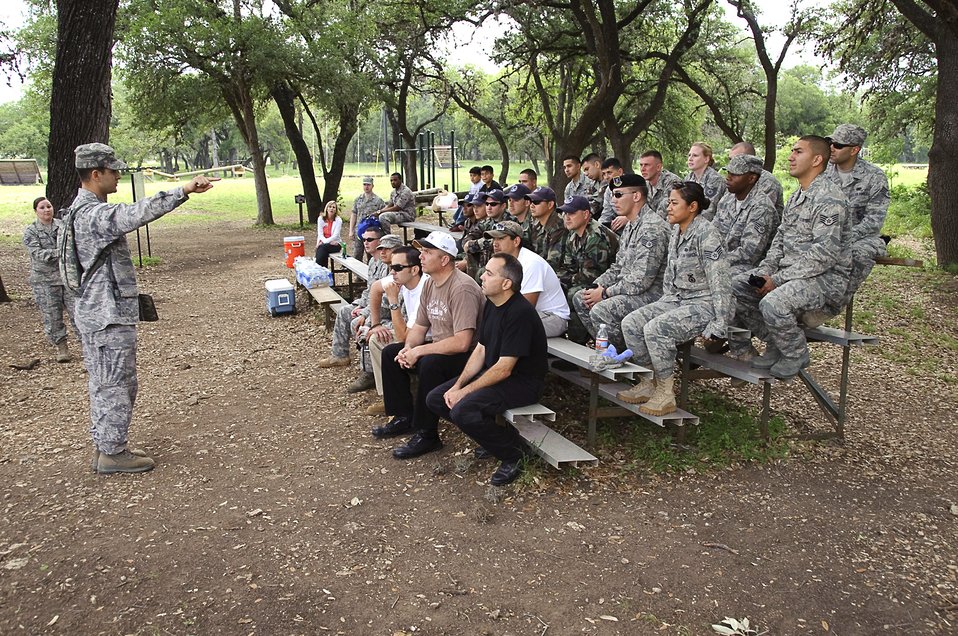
National Police Week 2010

Staff Sgt. Samson McFarland briefs participants from Joint San Antonio military installations and the Live Oak Police Department during an obstacle course and ruck march event May 12, 2010, at Camp Bullis, Texas. The event was part of a National Police Week commemoration. Military and civilian officers around the region participated in the event which honors the fallen.